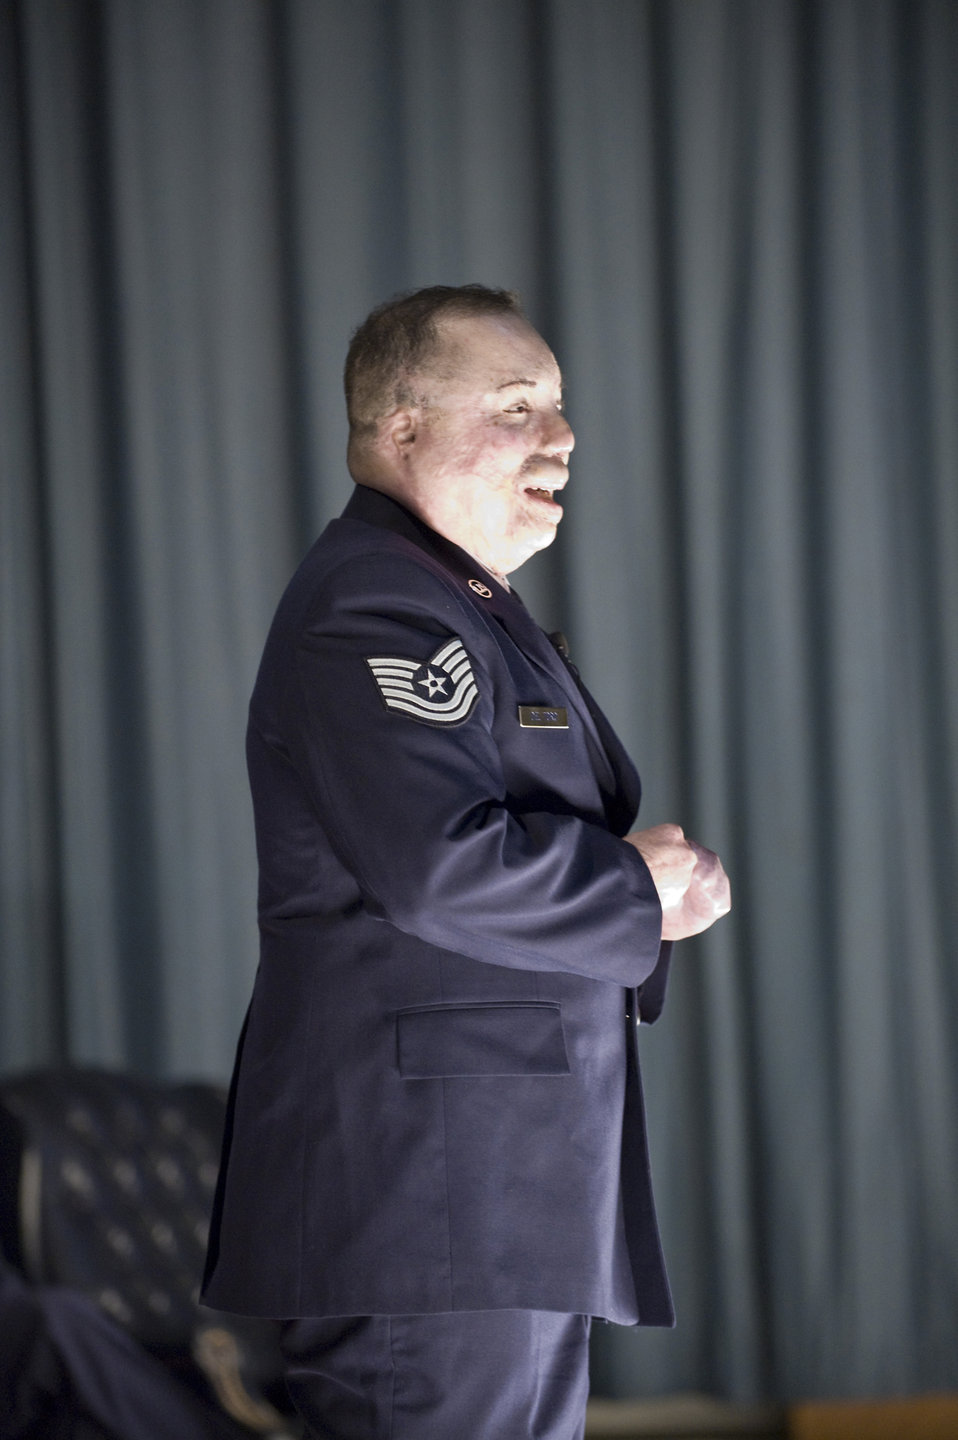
Tech. Sgt. Del Toro reenlists

Tech. Sgt. Israel Del Toro speaks to the audience Feb. 8 at the nearly packed base theater at Randolph Air Force Base, Texas, after his re-enlistment in the Air Force. Sergeant Del Toro, who suffered burns to more than 80 percent of his body after his vehicle was struck by an improvised explosive device in Afghanistan, will continue to serve as an instructor and recruiter for tactical air control party students.